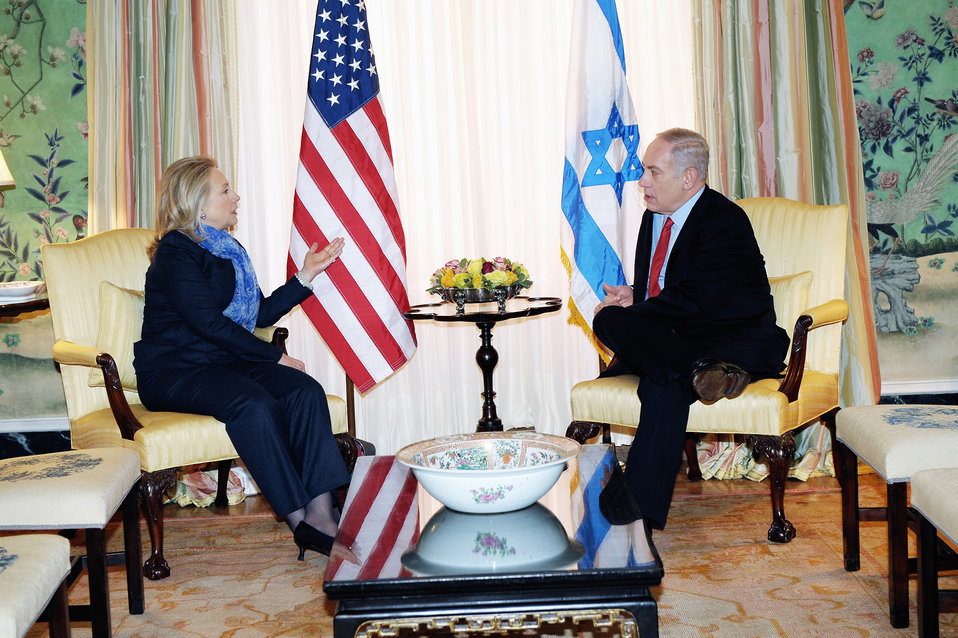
Secretary Clinton Meets With Israeli Prime Minister Netanyahu

U.S. Secretary of State Hillary Rodham Clinton meets with Israeli Prime Minister Benjamin Netanyahu at the Blair House in Washington, D.C., on March 6, 2012.